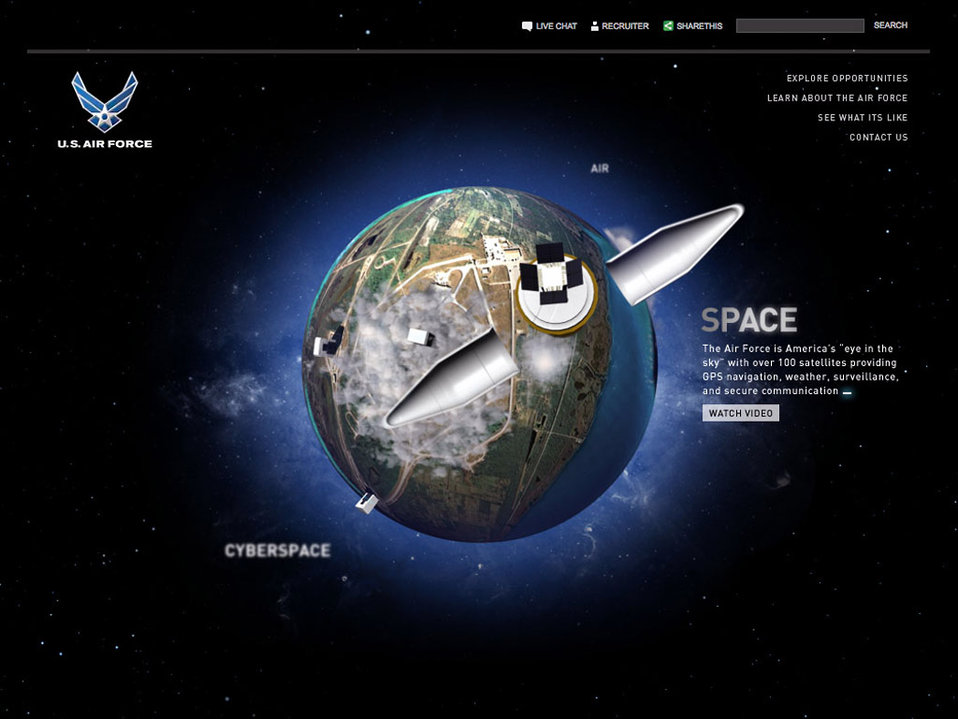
Air Force recruiting Web site redesign launched

Incorporating the latest Internet technologies while reflecting the way ahead for the service, Air Force Recruiting Service officials launched their redesigned Web site Dec. 15 at airforce.com.